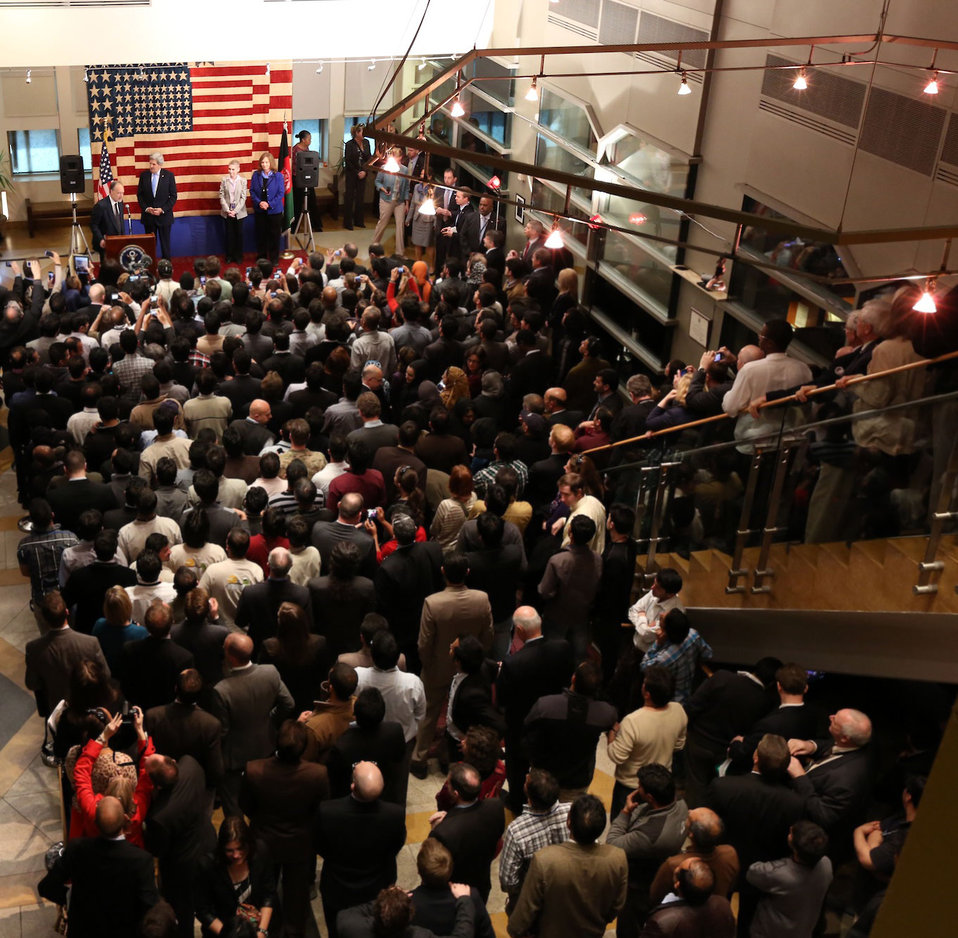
Secretary Kerry Speaks to U.S. Embassy Kabul Staff and Families

U.S. Secretary of State John Kerry speaks to U.S Embassy Kabul staff and families in Kabul, Afghanistan on March 26, 2013.